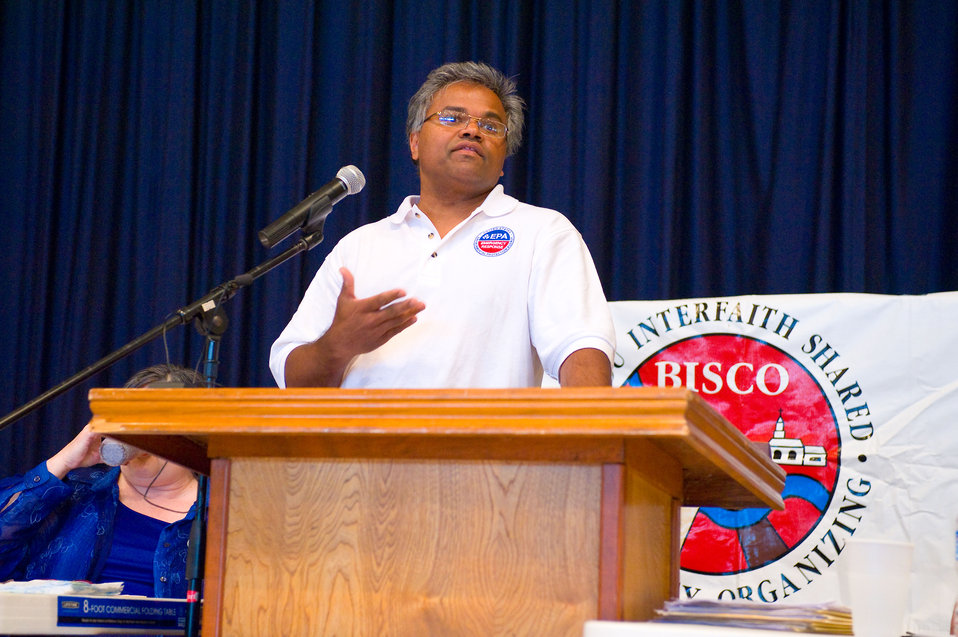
Community meeting in Dulac, La.

May 13, 2010. EPA Assistant Administrator Mathy Stanislaus answers a question at a community meeting in Dulac, La.